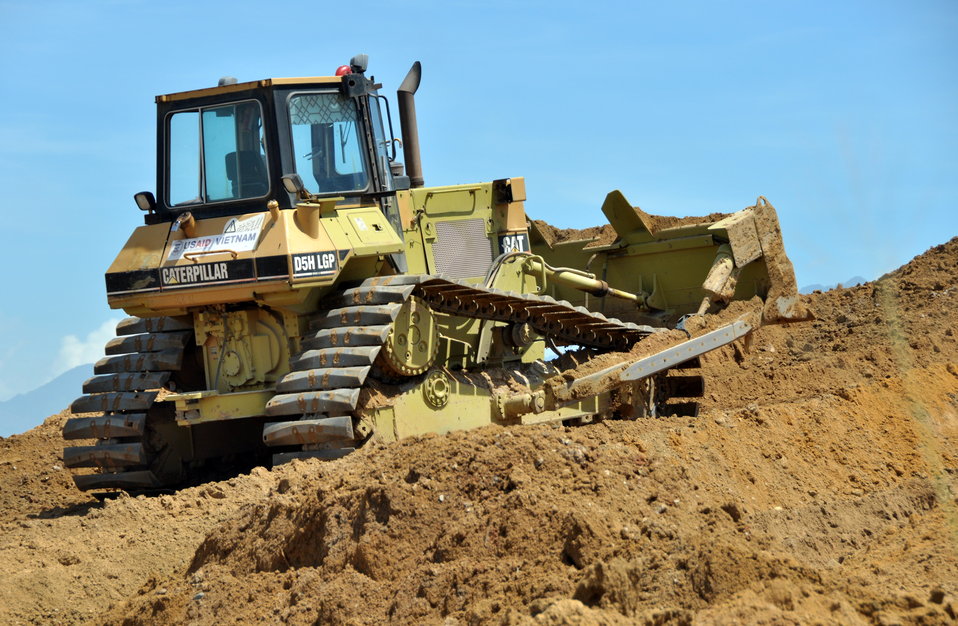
Environmental Remediation Progress at the Danang Airport site

Progress at the Remediation of Dioxin Contamination Project Site

Danang, Vietnam, June 5, 2013